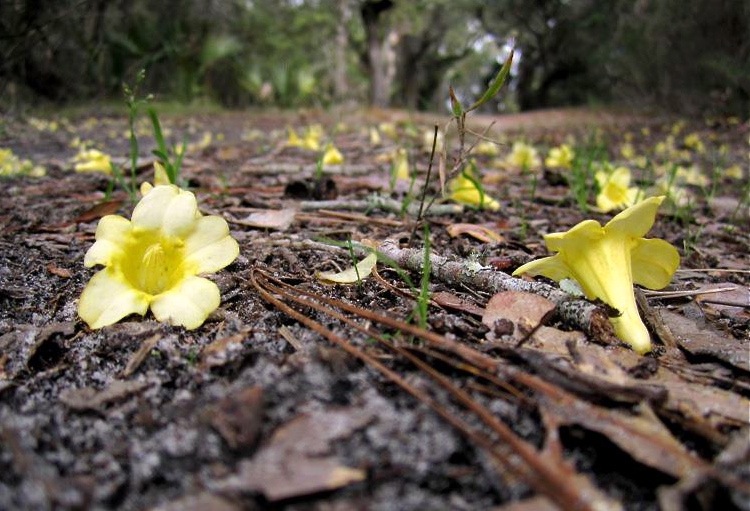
yellow jessamine blooms

....on March 2, 2012 at Bulls Island at Cape Romain National Wildlife Refuge in SC, a sure sign of spring.